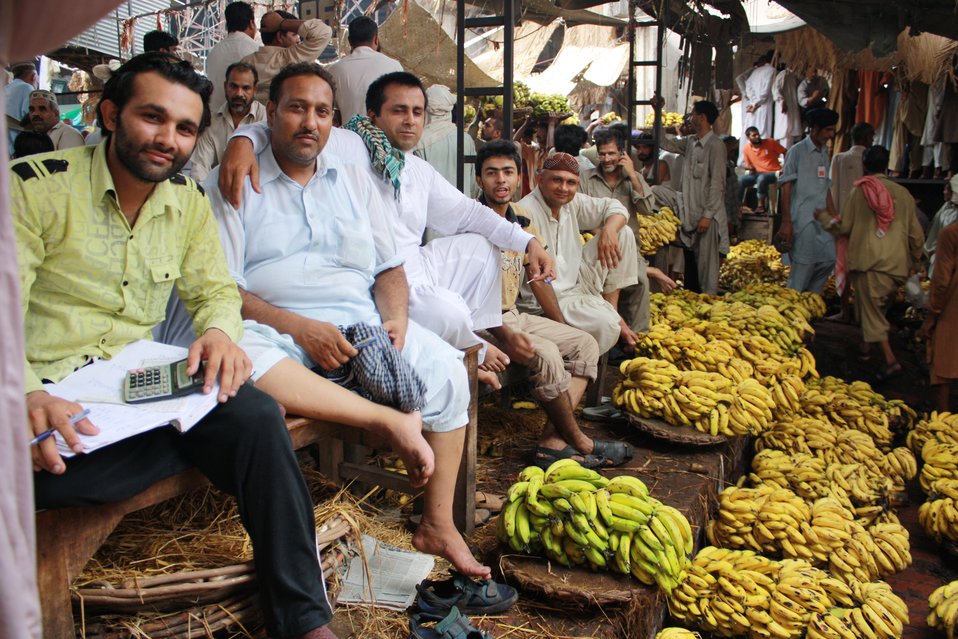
USAID Firms Project's Agriculture Marketing Reforms - 3

Traders and commission agents participate in the fruit action at the start of a busy day at the wholesale fruit mandi as soon as the trucks unload the fresh produce from the farms. Retailers can be seen displaying their fresh fruits for the encroachers who are busy negotiating rates.